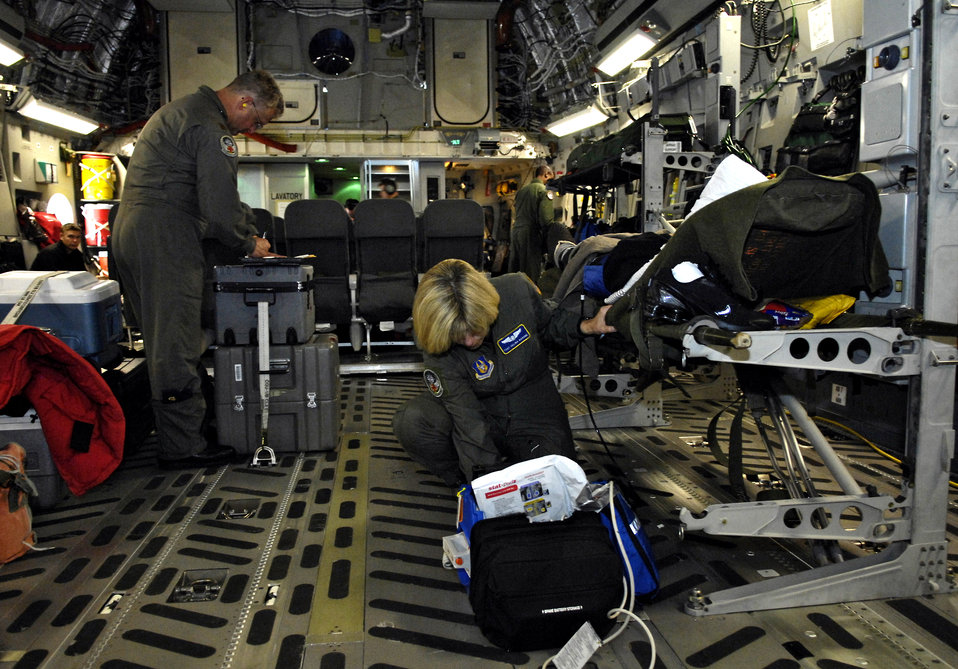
McChord C-17 crew flies medevac mission out of Antarctica

Tech. Sgt. Selina Barone take a patient's blood pressure on board a C-17 Globemaster III medical evacuation flight Aug. 28 from Antarctica. Sergeant Barone is assigned to the 446th Aeromedical Evacuation Squadron from McChord Air Force Base, Wash. The medical evacuation mission was flown for a patient who required more definitive medical treatment than can be handled in Antarctica.